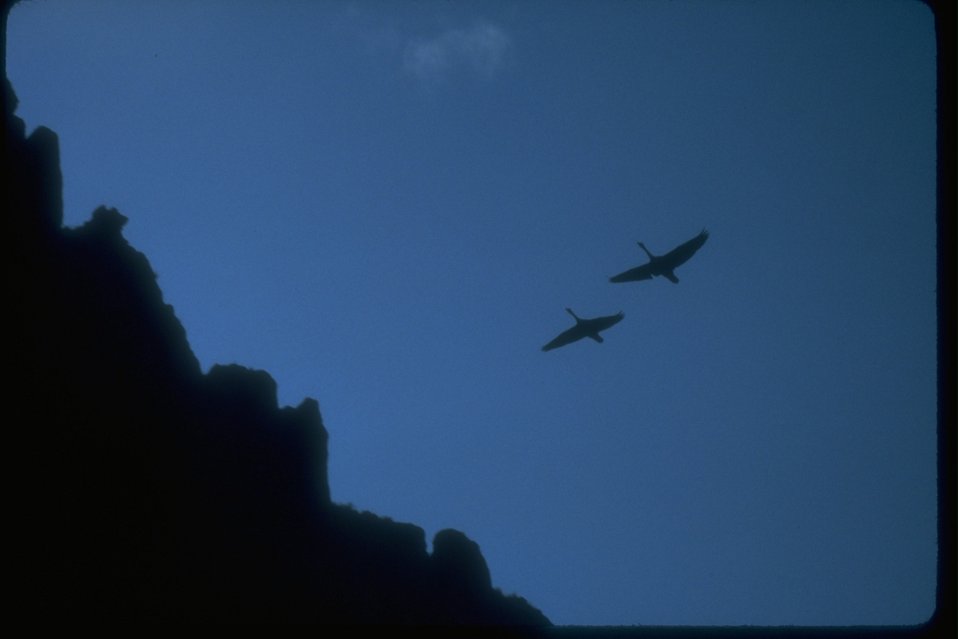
Two Turkey Vultures flying near Birds Cove at Rime Rock.